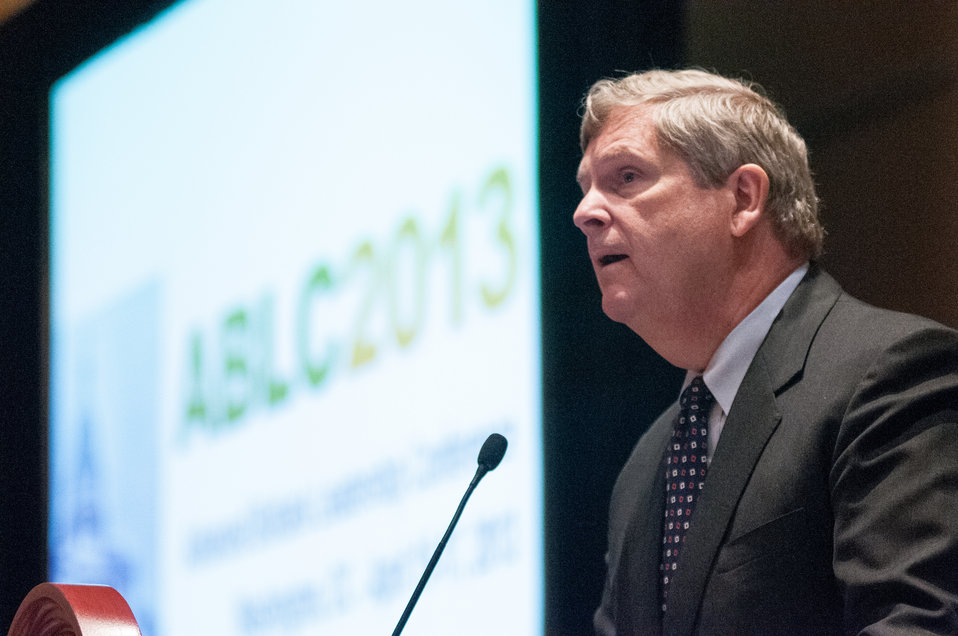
U.S. Department of Agriculture Secretary Tom Vilsack takes a moment to thank the Biofuels industry for all the good that they are doing for American farmers, after being presented the first Global Biofuels Leadership Award, during the Advanced Biofuels Leadership Conference at Gaylord National Harbor Convention Center, in National Harbor, Maryland, Monday, April 15, 2013.